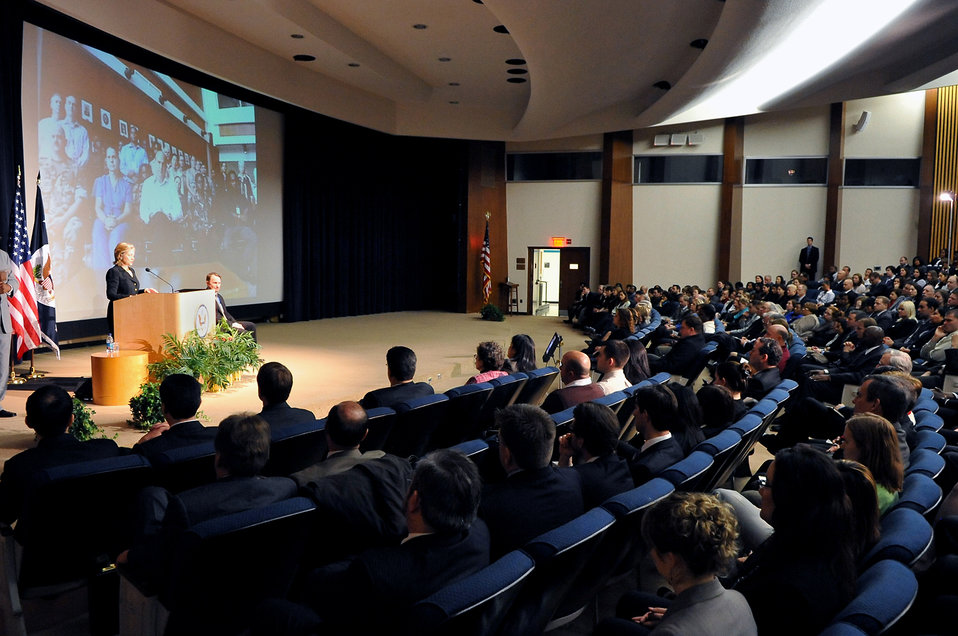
Secretary Clinton Honors Haiti Task Force Members

U.S. Secretary of State Hillary Rodham Clinton honors members of Haiti Task Force in Washington, DC March 15, 2010. State Department volunteers worked day and night during and after the earthquake in Haiti to aid in crisis.